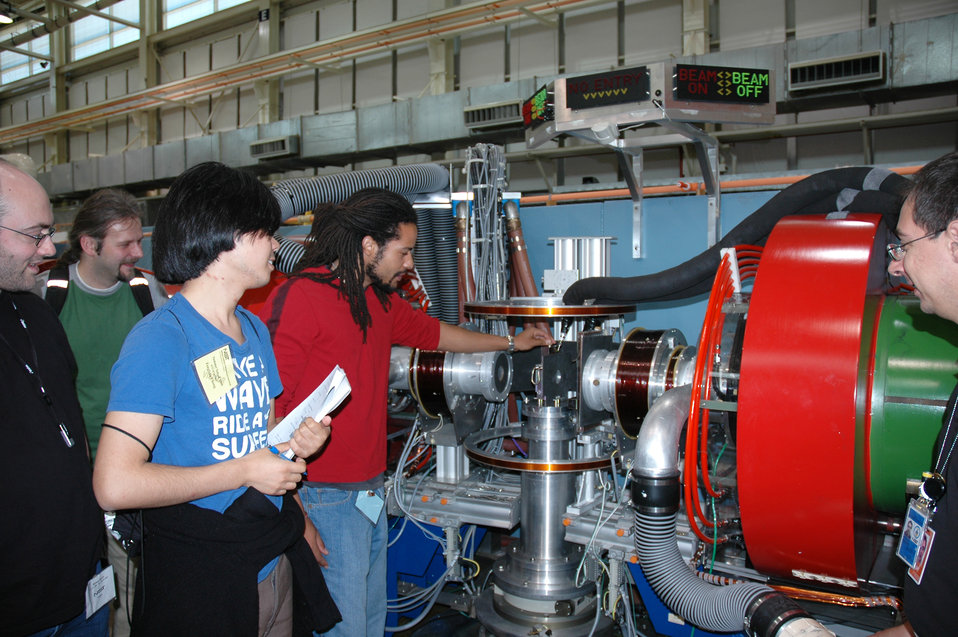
Neutron Science, summer students

Khiza Mazwi, a student from the University of Southern California, replaces a sample in the spin echo spectrometer while other participants in the NCNR summer school look on.